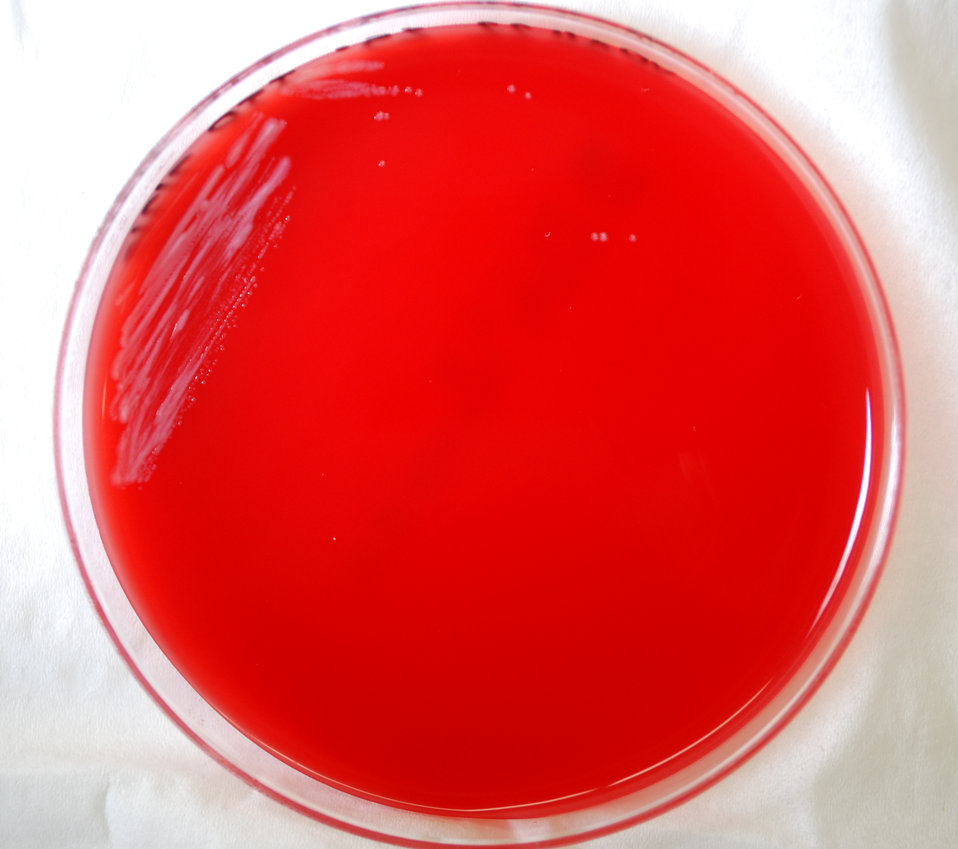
This photograph depicts the colonial morphology displayed by Gram-negative Yersinia pestis bacteria, which was grown on a medium of sheep's blood agar (SBA), for a 48 hour time period, at a temperature of 25�C. For a closer look at these colonies, see PHIL 12223.